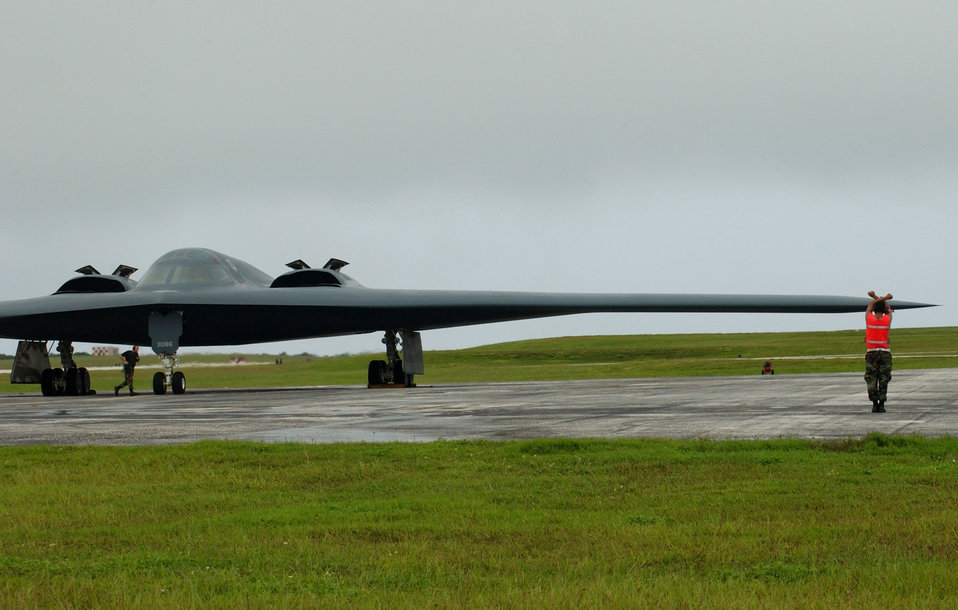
Crew chiefs keep B-2 combat capable

Airmen deployed from Whiteman Air Force Base, Mo., perform the last of their procedures to get the B-2 Spirit in the air Oct. 24 at Andersen Air Force Base, Guam. While one Airman removes the chocks from the wheels, another prepares to guide the jet to its launch point.